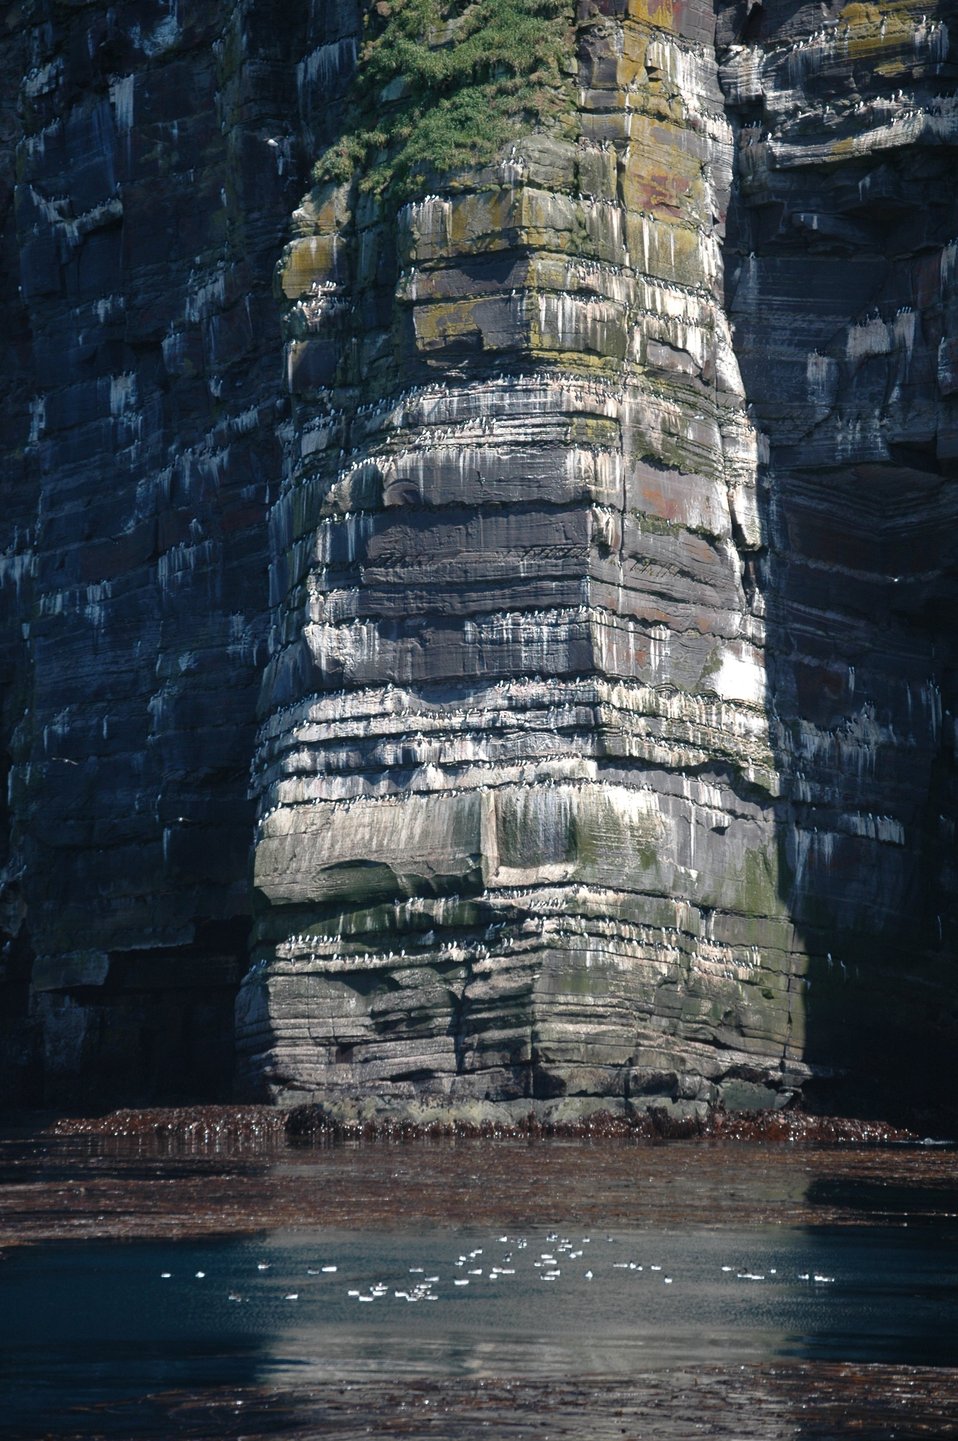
Kagamil Island Bird Wall